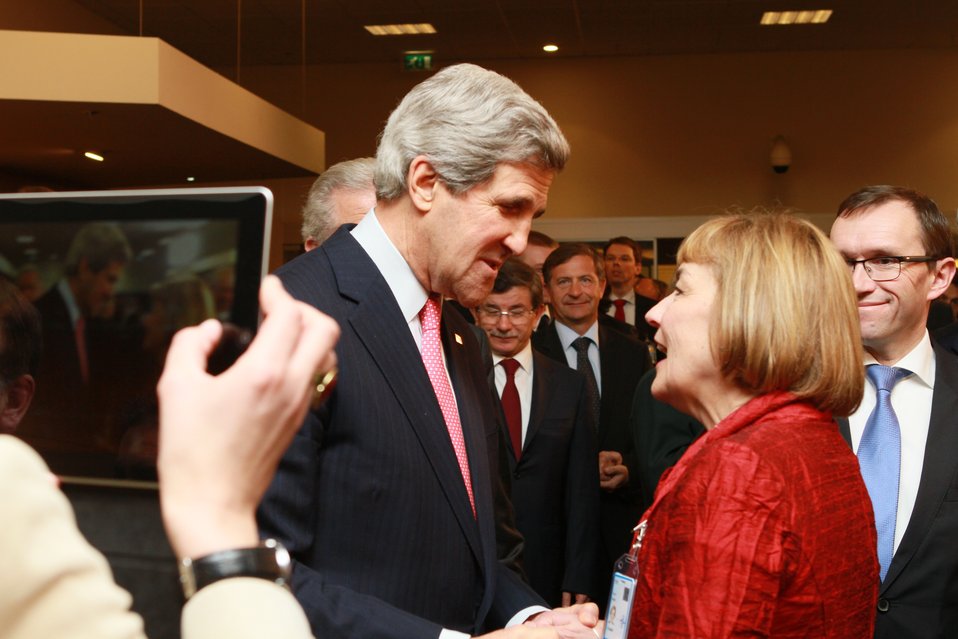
Secretary Kerry Speaks With Croatian Foreign Minister Pusic

U.S. Secretary of State John Kerry speaks with Croatian Foreign Minister Vesna Pusic at the NATO Foreign Ministerial in Brussels, Belgium, on April 23, 2013.